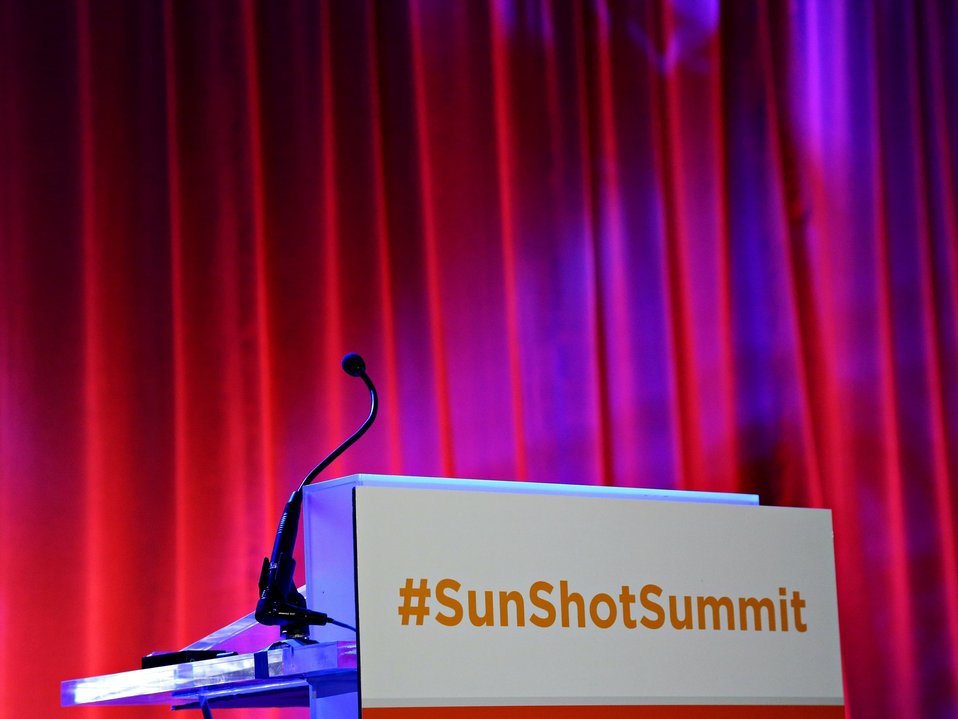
Day 2 SunShot Grand Challenge Summit